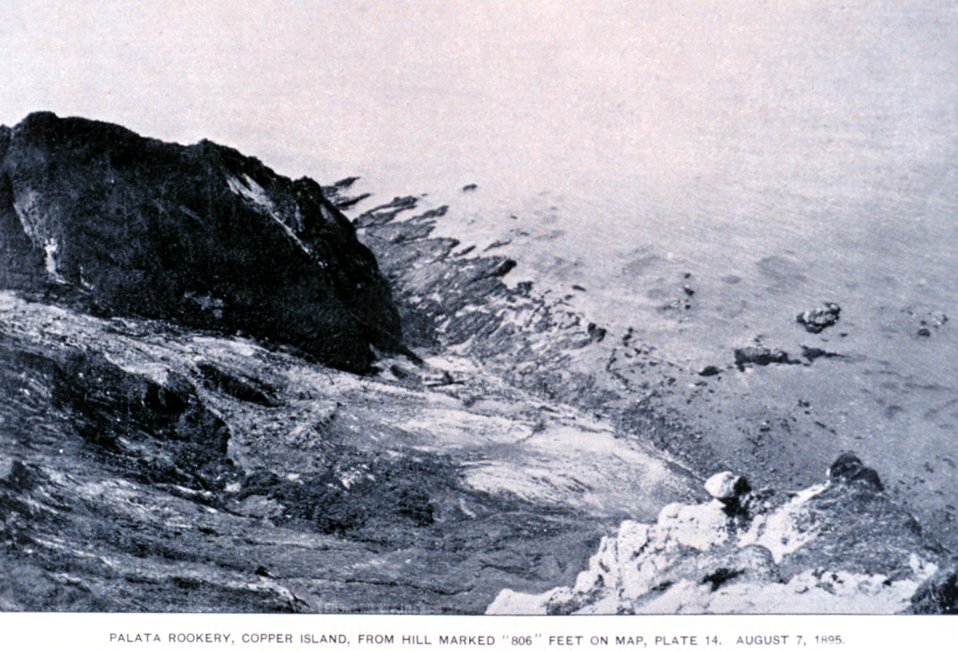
Palata fur seal rookery from 'Hill 806'